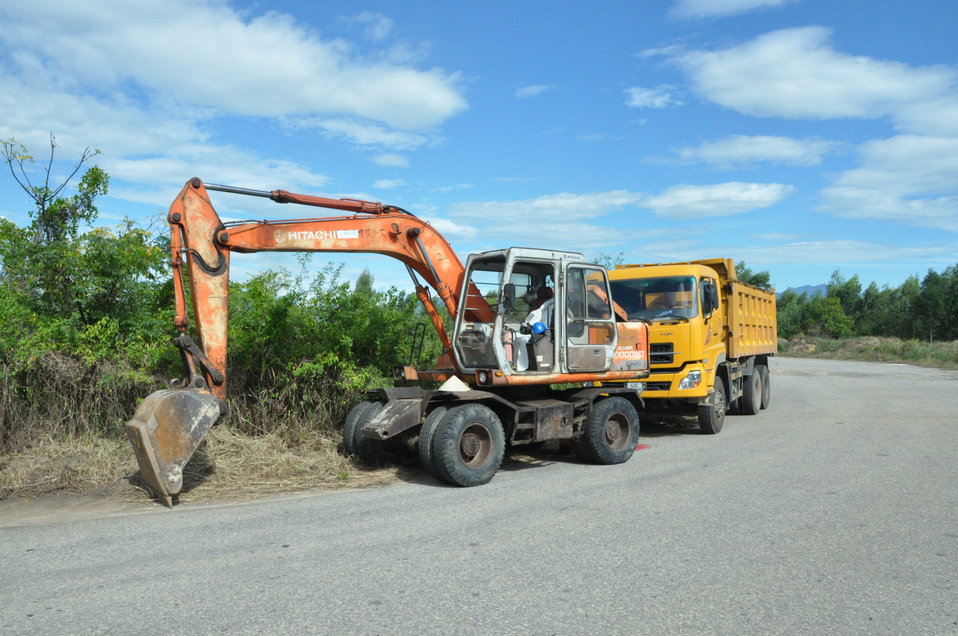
Environmental Remediation of Dioxin Contamination at Danang Airport Project Launch

August 9, 2012